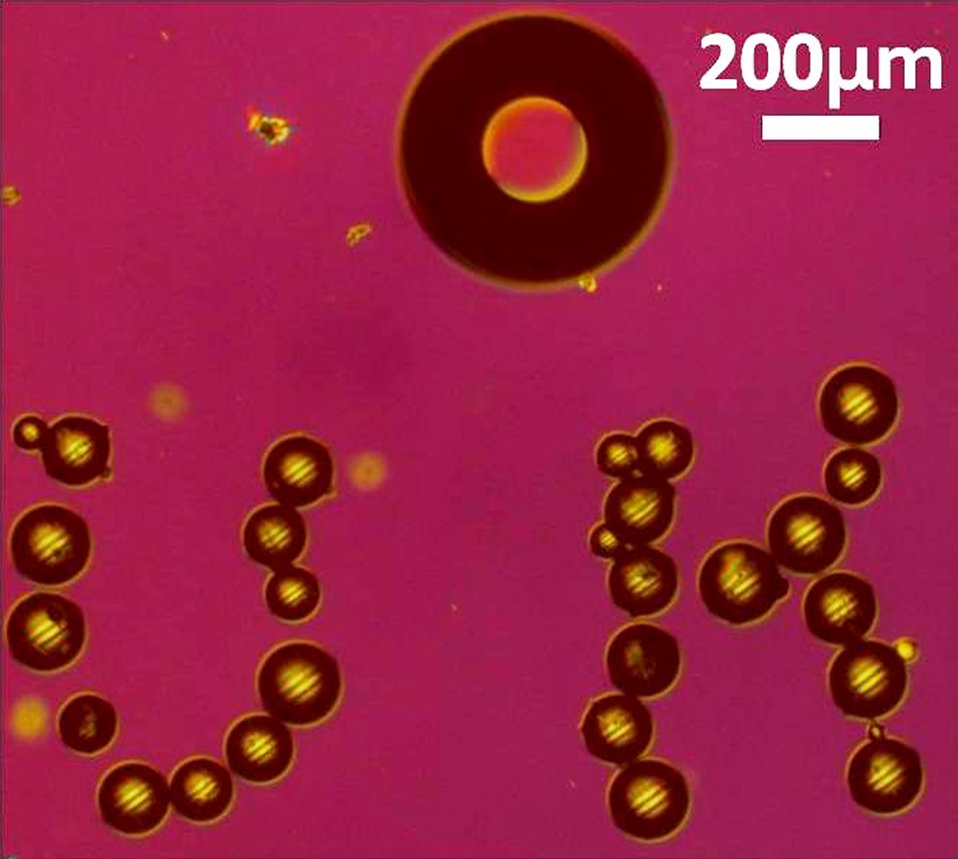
Microrobot

A photomicrograph showing the microrobot built by the University of Hawaii (circular object in top center) along with a series of glass beads that it assembled into a mini 'U H'. The 200 micrometer scale bar in the upper right corner is about the length of a paramecium.

For more information see the NIST Tech Beat story.